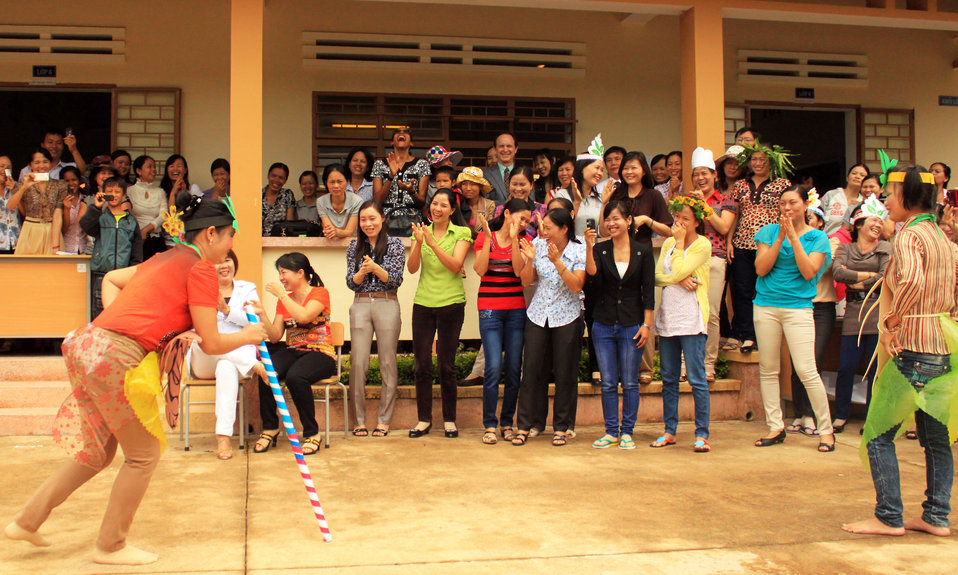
Teachers in Kon Tum practice what they learned from USAID-funded intensive training courses